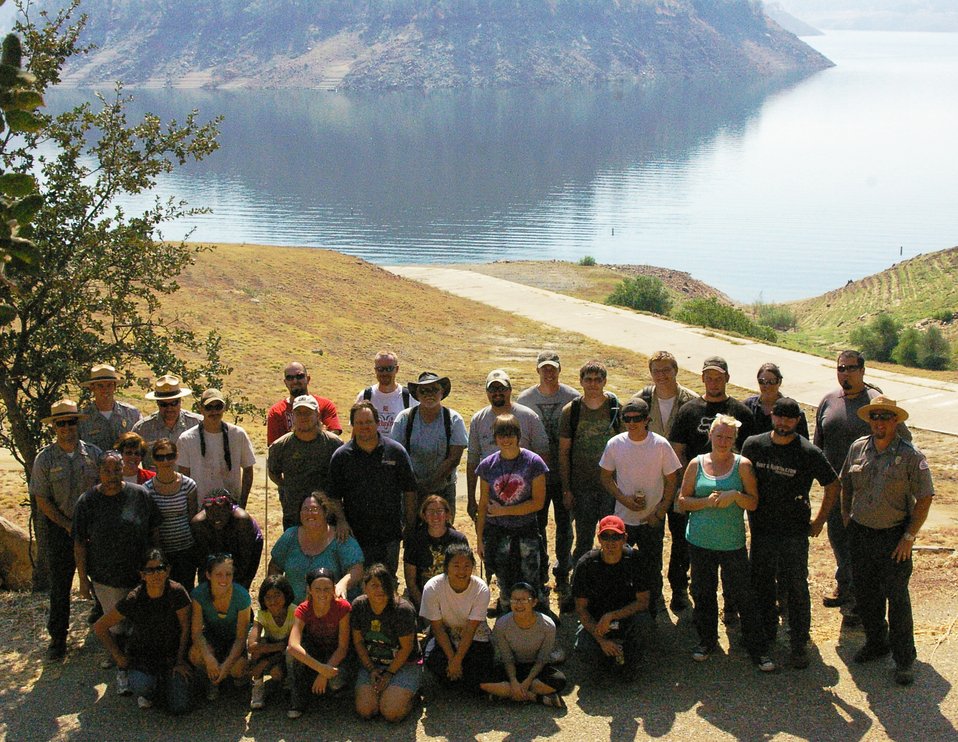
PINE FLAT LAKE, Calif. (Sept. 25, 2010) -- Volunteers pause for a group photo during the 17th annual National Public Lands Day here Sept. 25. Park rangers from the U.S. Army Corps of Engineers Sacramento District and more than 33 volunteers celebrated the day with cleanup efforts at the park. The Corps has been involved with National Public Lands Day since its inception in 1994 and has consistently been one of the largest providers of sites and volunteers participating in the event. This year, the celebration coincides with California Coastal Cleanup Day and President Barack Obama’s America’s Great Outdoors Initiative, an effort to promote the conservation of outdoor spaces and reconnect Americans to the outdoors.